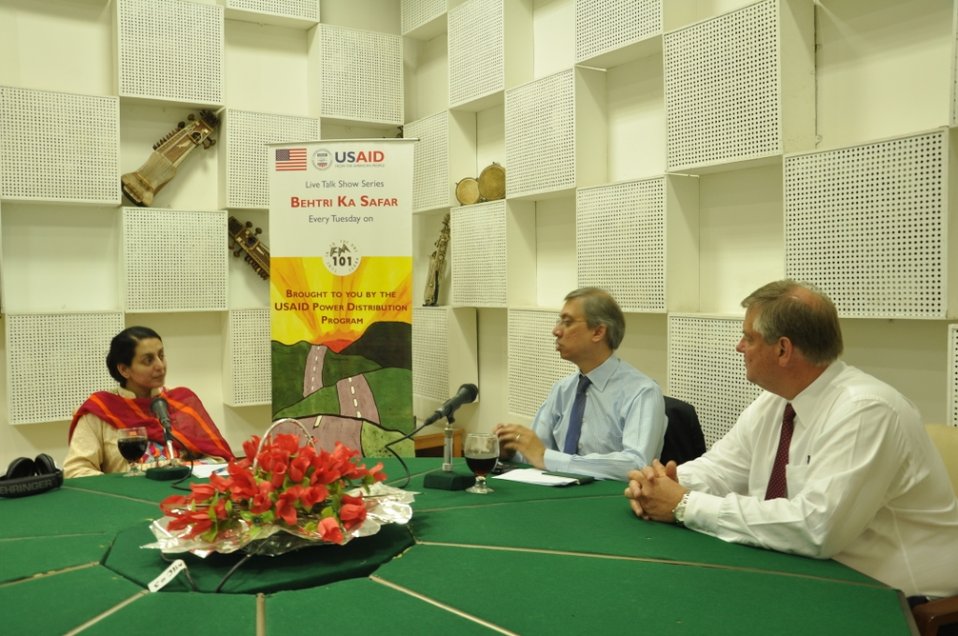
Radio Program on Governance

Radio Program with JS.
“Behtri Ka Safar”, the Program’s weekly call-in radio show in Urdu, highlighted the US-Pakistan energy cooperation and USAID’s ongoing projects in close collaboration with the Ministry of Water and Power. Mr. Zargham Khan, Joint Secretary Power represented the Ministry of Water and Power while Power Distribution Program was represented by Bob Kolling, Senior Distribution Adviser for the Ministry of Water and Power. While speaking on the program, the Joint Secretary Power highly appreciated USAID’s assistance for Pakistan’s power sector reforms.